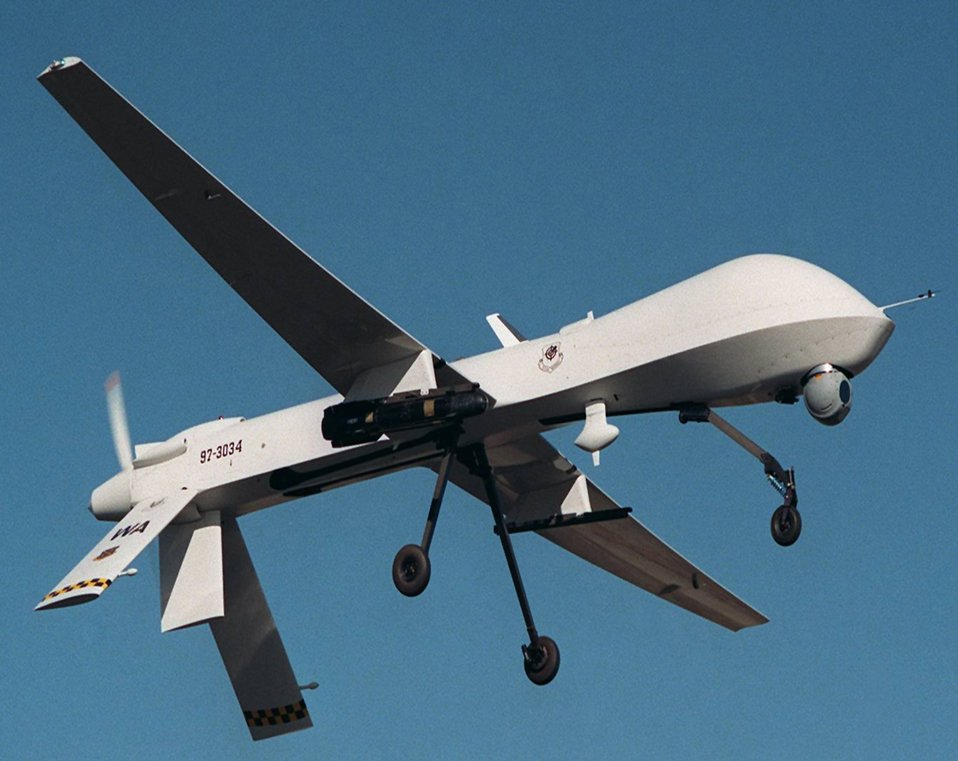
MQ-1B Predator

The MQ-1 Predator unmanned aerial vehicle is a medium-altitude, long-endurance, remotely piloted aircraft. The Predator's primary mission is interdiction and conducting armed reconnaissance against critical, perishable targets. When the Predator is not actively pursuing its primary mission, it acts as the joint forces air component commander-owned theater asset for reconnaissance, surveillance and target acquisition in support of the joint forces commander.